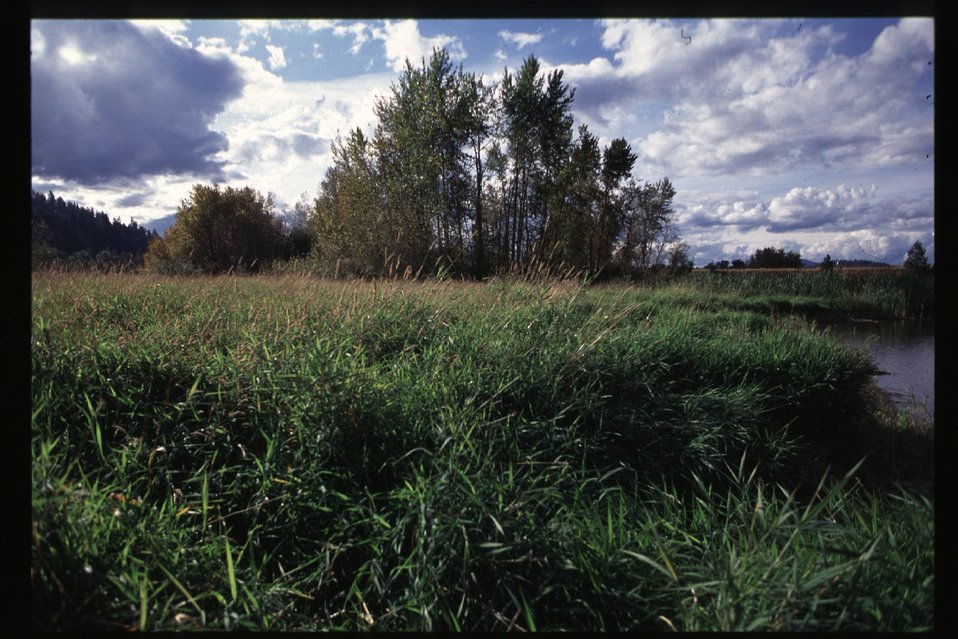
Scenic Blackwell Island Couer d'Alene Field Office UCSC Upper Columbia Salmon Clearwater District